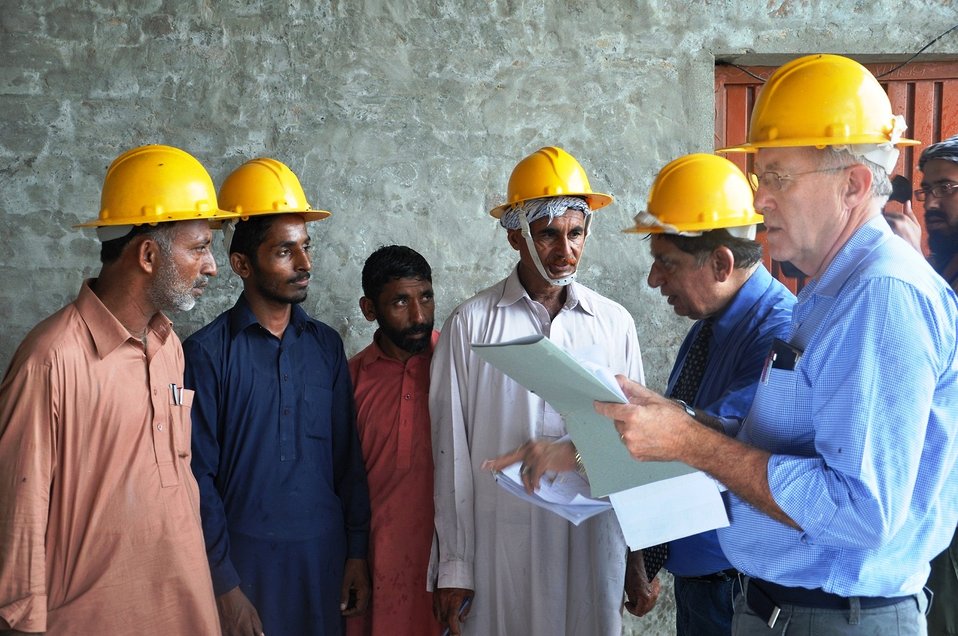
Field Visit at MEPCO - Power Factor Correction Performance Improvement Project 2

Multan, September 13, 2011- USAID's Power Distribution Program implementing its Rural Feeder Optimization Performance Improvement Project at MEPCO's Lal Kamal Feeder. The Lodhran Subdivision was jointly selected as the site for the Power Factor Correction Performance Improvement Project. This project aimed at reduction of technical losses, improvement of voltage and release of power system capacity by installing capacitors on the Tube-well motors active on the feeder.